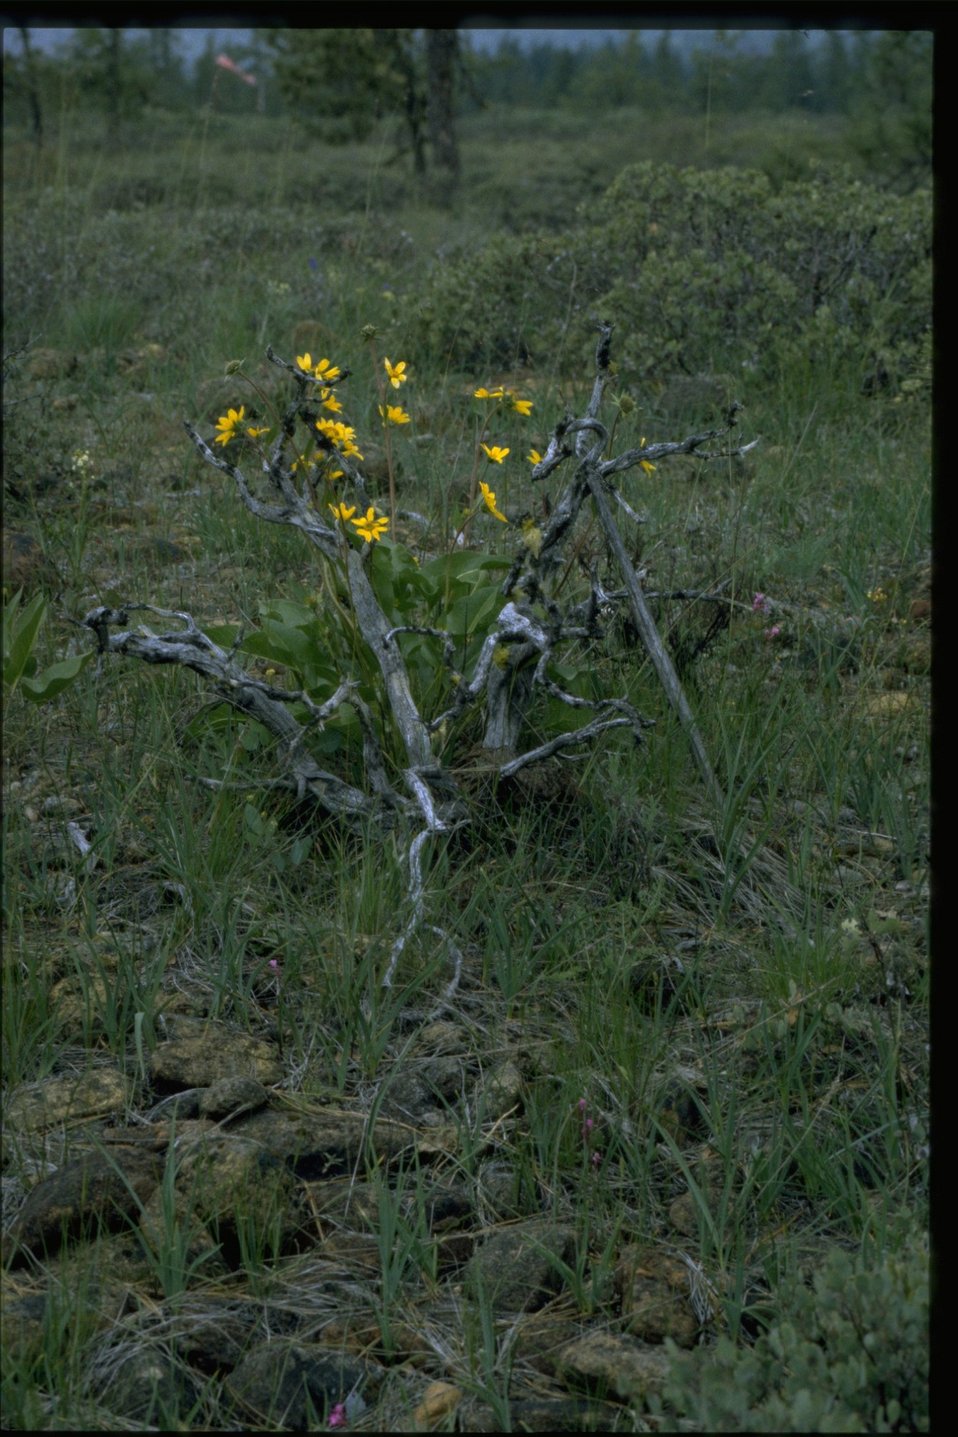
Farshot of Balsamorhiza deltoidea.